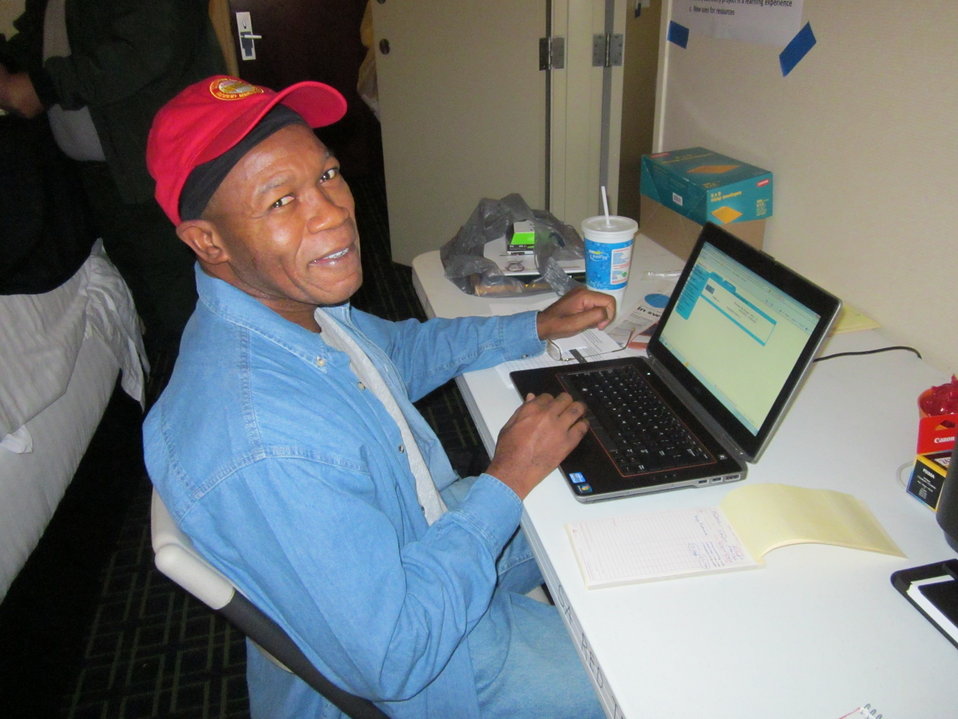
Red Team computer specialist

Charleston, WV, November 5, 2012: Computer Specialist Tony Farmer works with the Southern Area Type 1 Red Incident Management Team to respond to Super Storm Sandy in West Virginia. The team's assignment was to clear roads and help manage staging areas for relief supplies in Martinsburg and Charleston. Farmer is an IT specialist at the U.S. Fish and Wildlife Service Northeast Regional Office in Atlanta, GA.